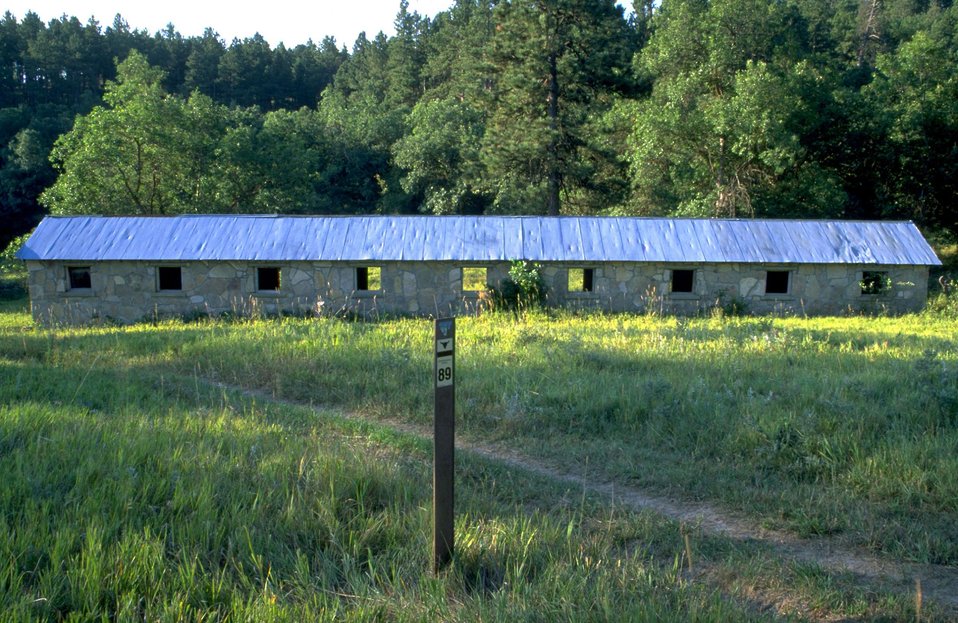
Long stone building at south end of Fort Meade